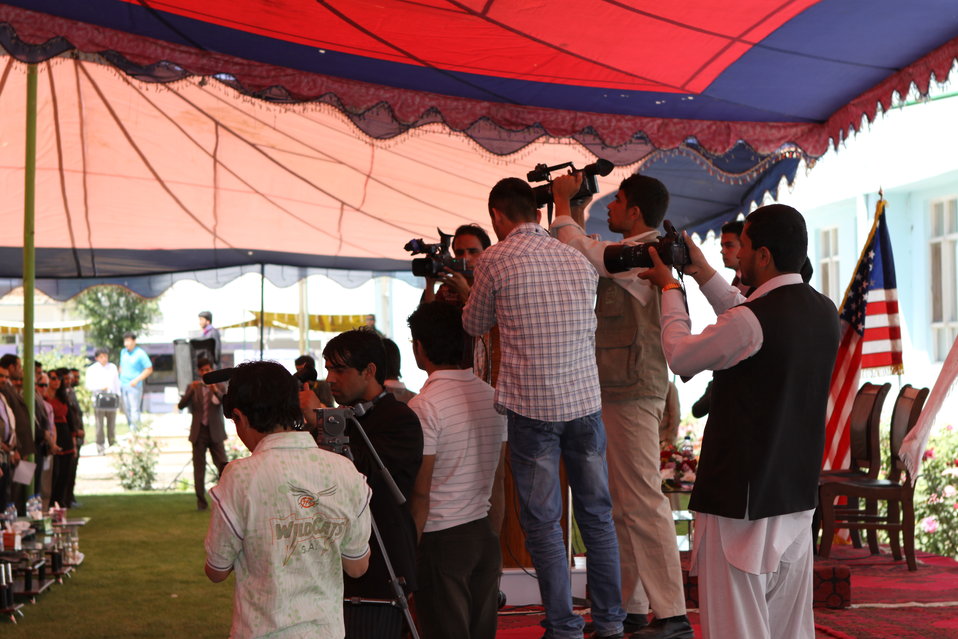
100522 ATVI Graduation 051